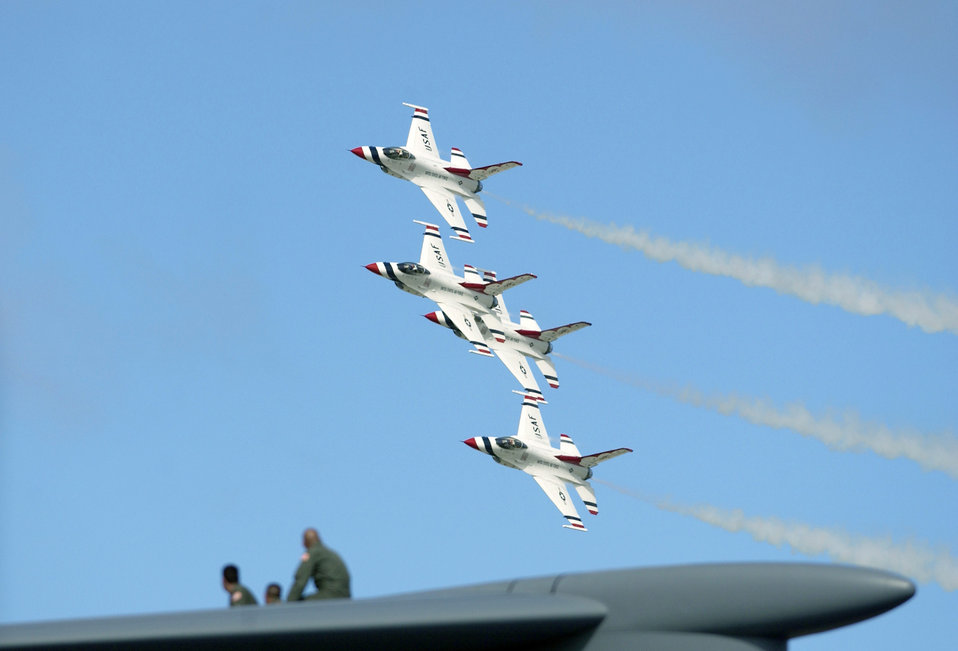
Thunderbirds

ANDERSEN AIR FORCE BASE, Guam -- The United States Air Force Demonstration Team